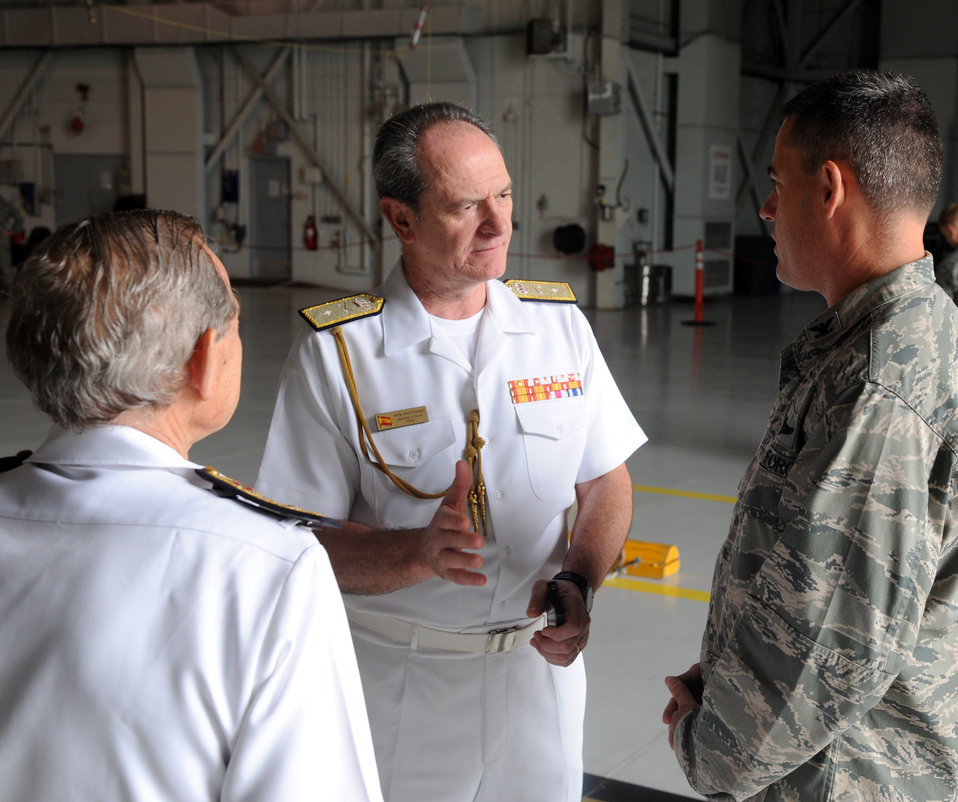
MacDill helps reunite Spanish government, lost gold

Spanish Navy Rear Adm. Javier Romero, a defense attach√©, talks with Col. Lenny J. Richoux, the 6th Air Mobility Wing commander, at MacDill Air Force Base, Fla., Feb. 23, 2012. Romero is escorting half of $1 billion in Spanish coins, which were lost at sea in the 19th century and unearthed three years ago, back to Spain.